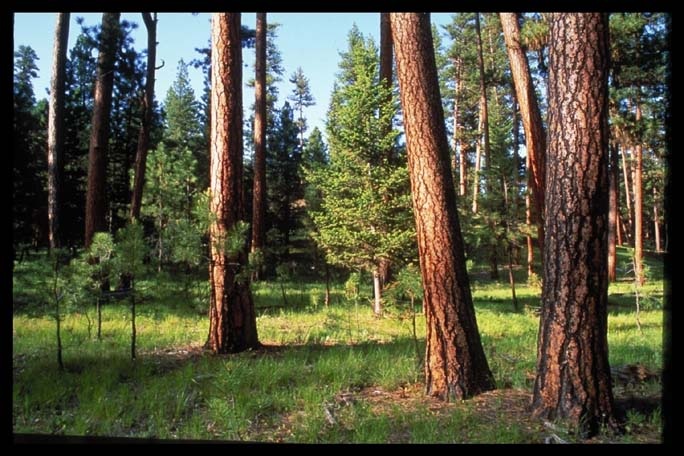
Regrowth